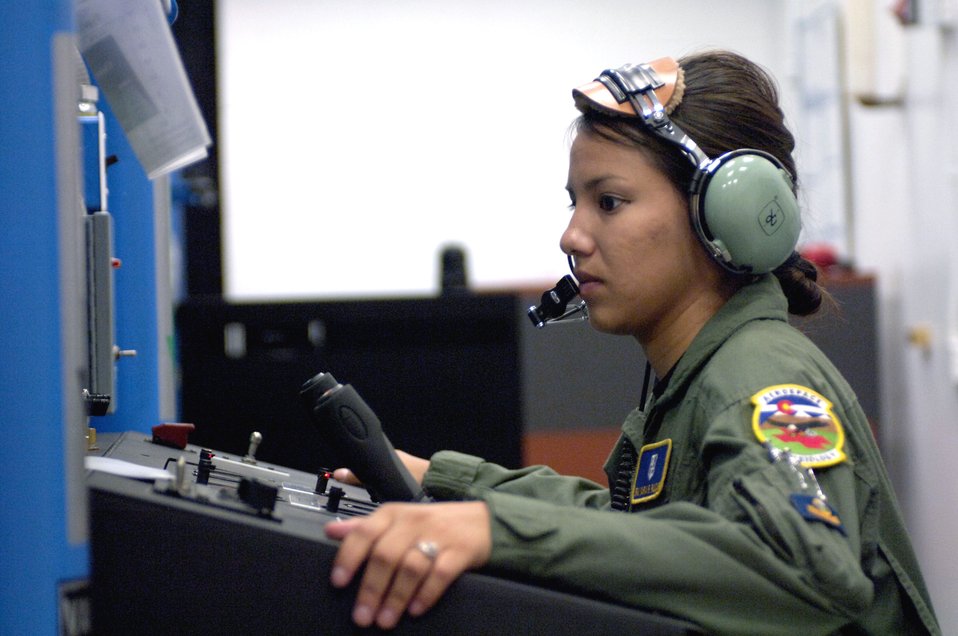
Physiological training crucial for aircrews

Senior Airman Maria Paucar tests the altitude chamber to prep it for a physiological training class at Peterson Air Force Base, Colo., on Aug. 9. Airman Paucar is an aerospace physiological technician with the 21st Aerospace Medical Squadron.